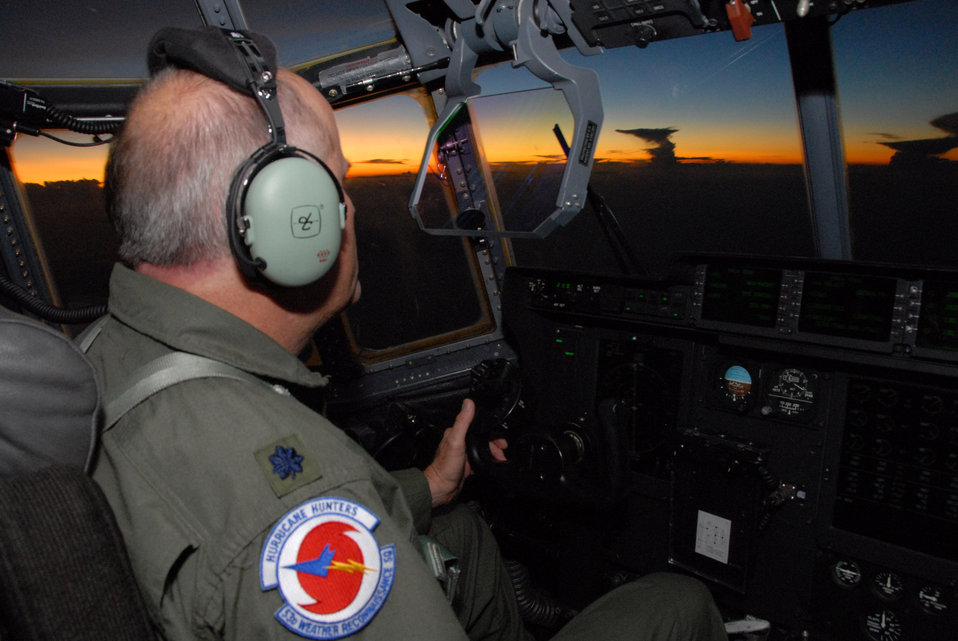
Hurricane Hunters fly nonstop into Ike

Lt. Col. Mark Carter views thunderstorms and sunset through the heads-up display of the WC-130J Hercules after collecting Hurricane Ike data Sept. 10 over the Gulf of Mexico. The flight lasted more than nine hours and helped improve the National Hurricane Center forecast by 30 percent. Colonel Carter is a pilot with the 403rd Wing.